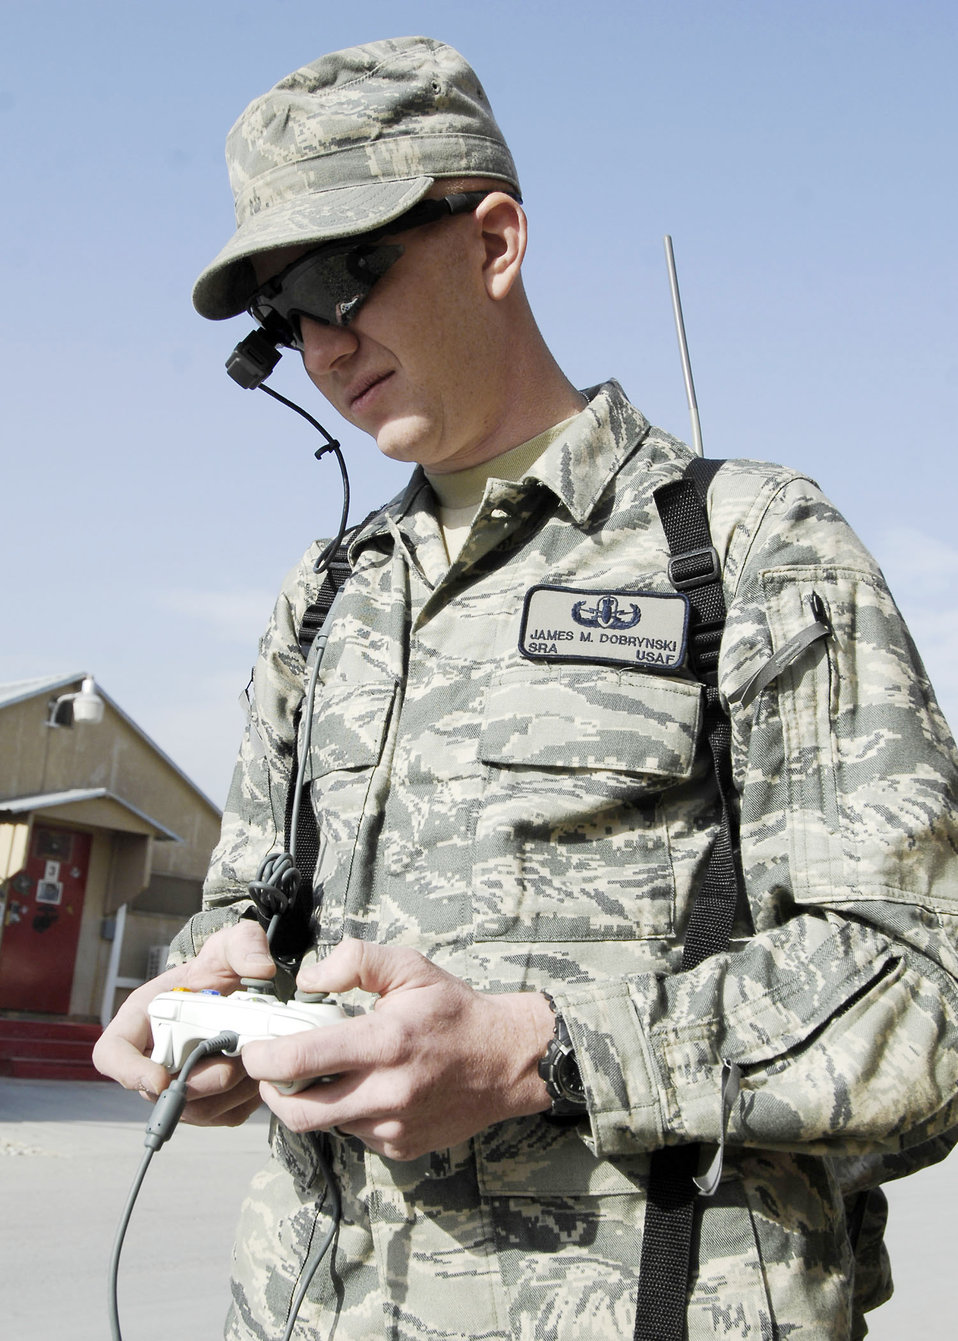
The weapons of warfare adapt with the age of Airmen

Senior Airman James Dobrynski, an explosive ordnance disposal technician at Bagram Airfield, Afghanistan, uses an Xbox controller to maneuver a robot during training Oct. 26, 2009. The robot is being used to remove plastic around a mock improvised explosive device. Airman Dobrynski is a joint expeditionary tasked Airman attached to the 741st EOD Battalion. He is deployed from Luke Air Force Base, Ariz., and hails from St. Louis, Mo.